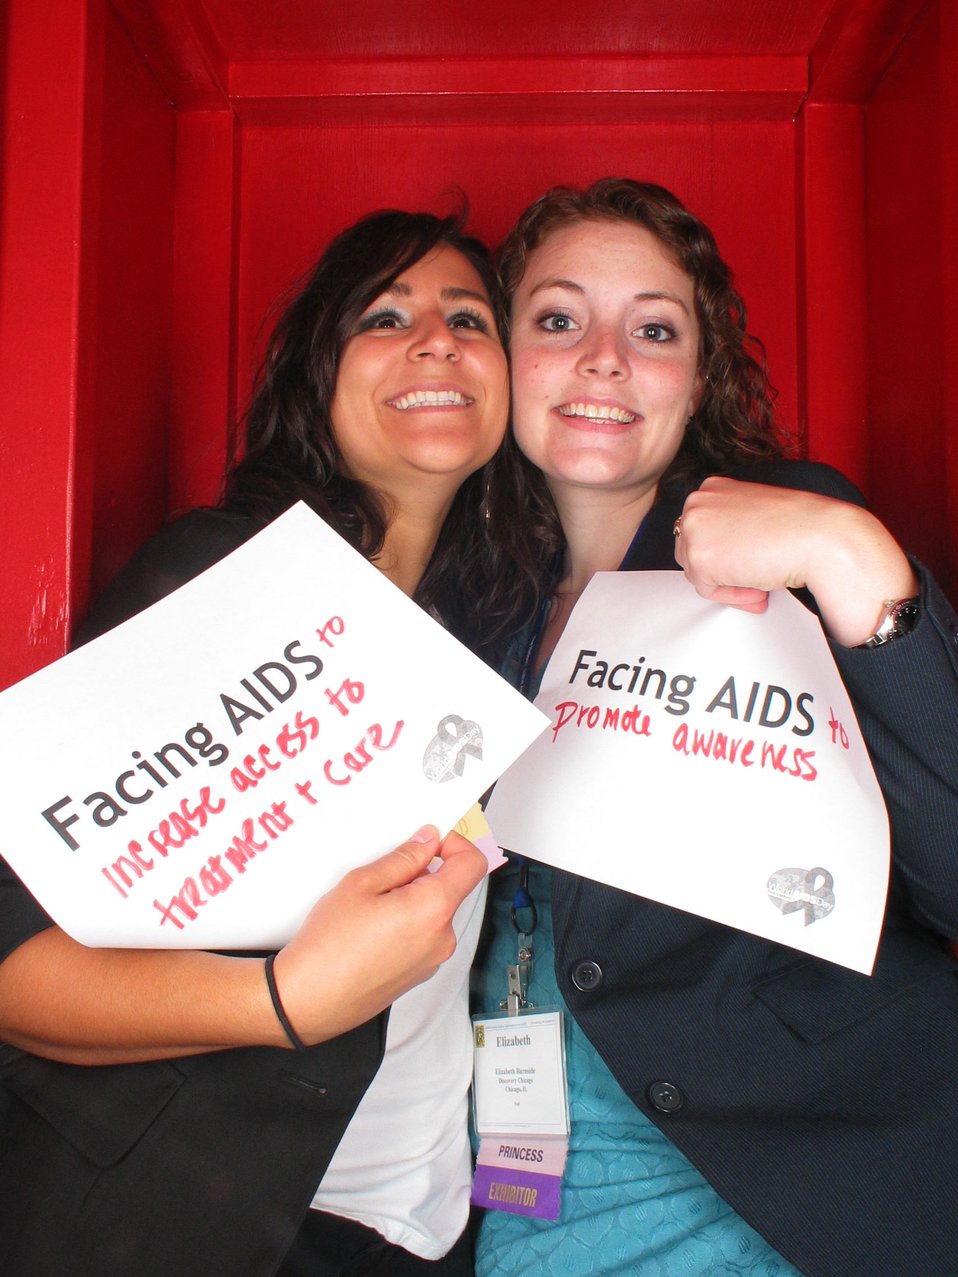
Facing AIDS to increase access to treatment and care. Facing AIDS to promote awareness